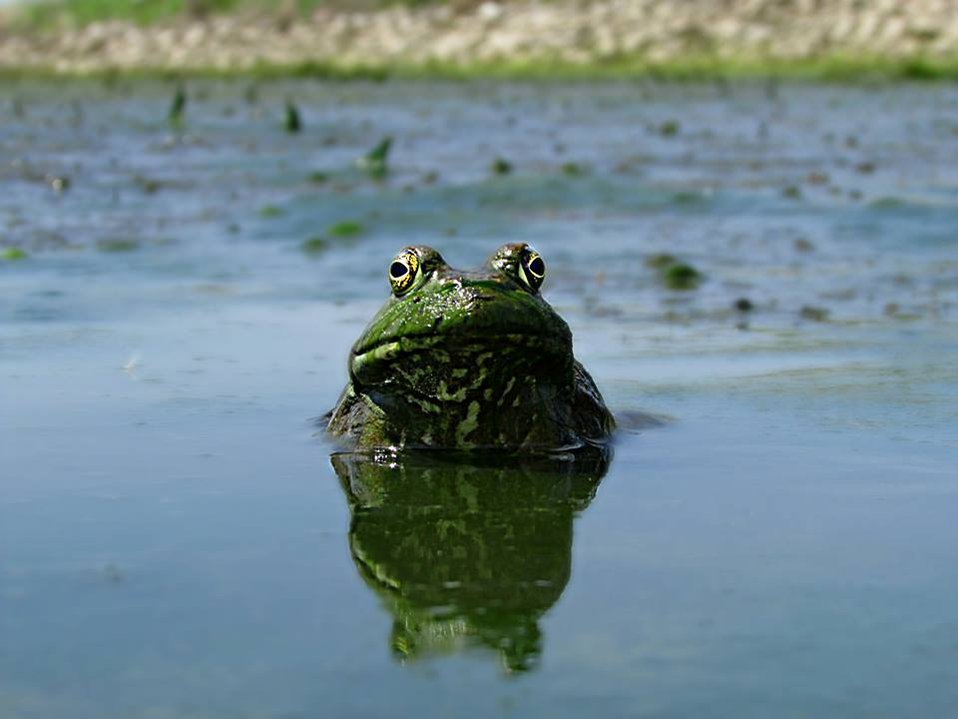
Bullfrog

Often heard but seldom seen, many bullfrogs call our hatchery home. They are an insect's nightmare with their muscly legs, webbed feet, huge mouth and 360 degree vision.

We have seen them make meals of fish and become meals of fish, serving as a unique part of our pond ecosystem.